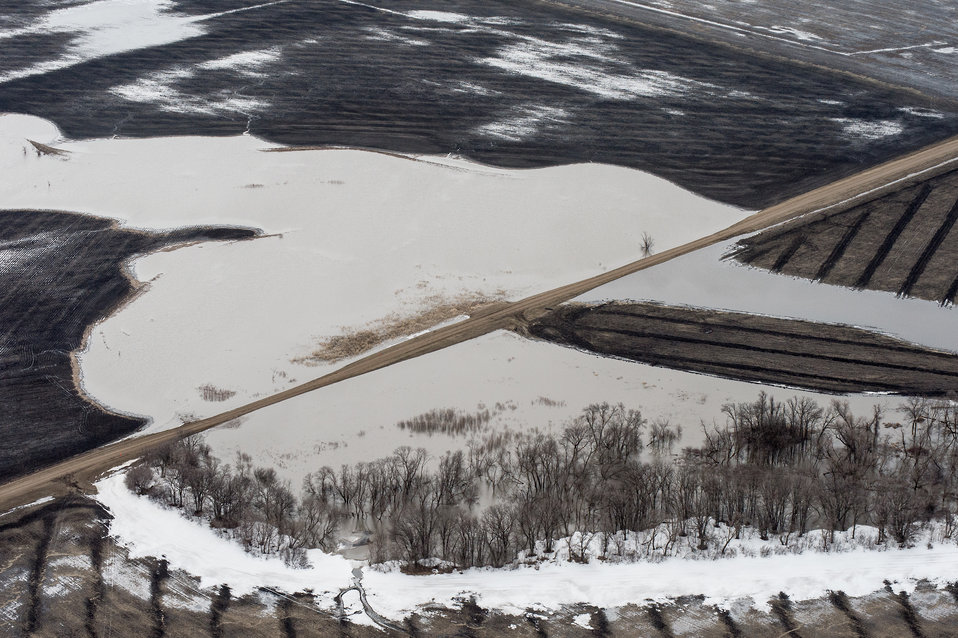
Flooding of farm fields near Morris Dam, in Pembina County, ND, part of the Red River basin, on Wednesday, May 1, 2013. For information about this and other programs from the USDA Red River Basin Initiative (RRBI) please see www.mn.nrcs.usda.gov/news/features13/RRBI.html.